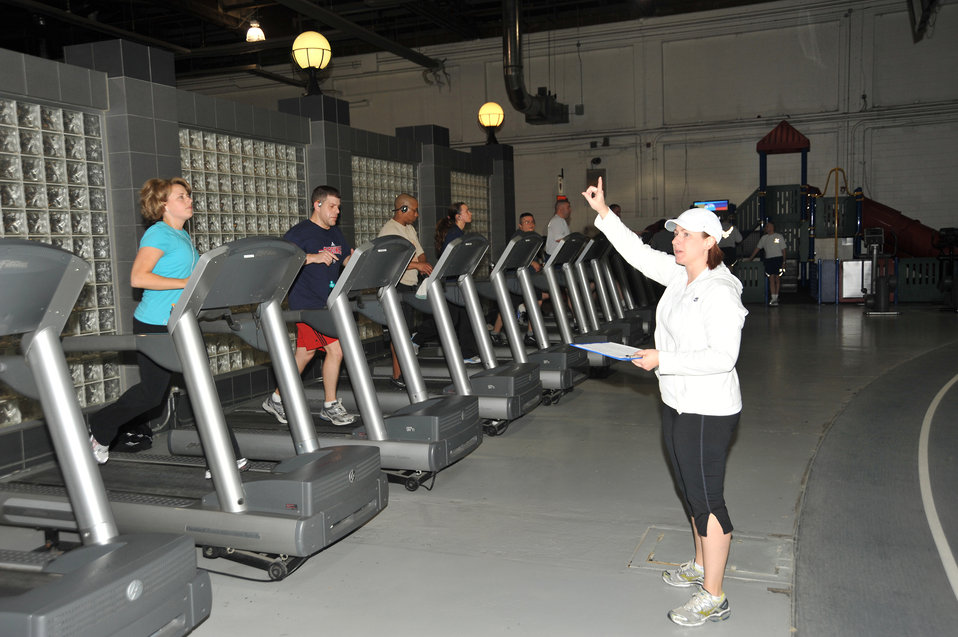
Get Fit Run

Marcy Jameson gestures to participants in the Get Fit Run class at Offutt Air Force Base, Neb. Ms. Jameson is an exercise physiologist and the health and wellness center flight chief at Offutt AFB.